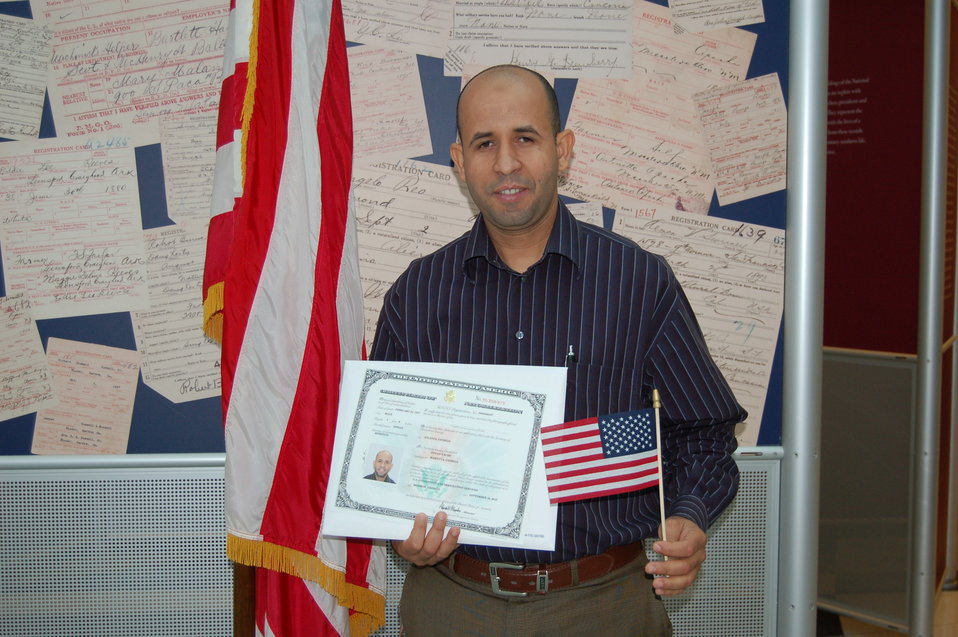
New Citizens